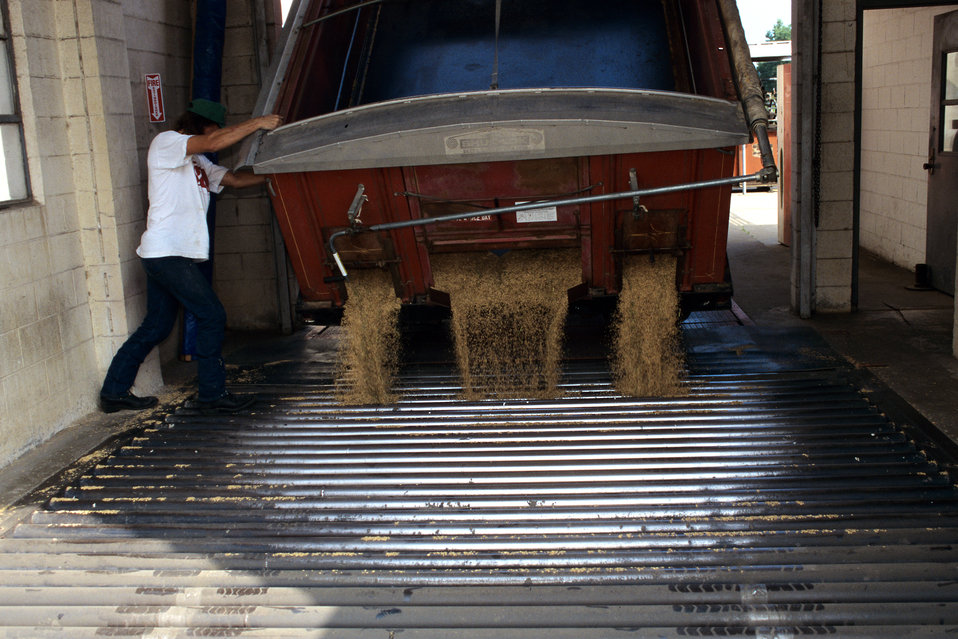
A local driver dumps a load of rough rice into a grain dump pit at Riceland Foods Incorporated in Jonesboro, AR on Sept. 1, 1996. USDA GIPSA offers inspection services for rice upon request on a fee basis for both domestic and export shipments. Rice inspection services are divided into two basic types: inspection for grade or factor analysis without grade. Inspection for grade involves analyzing the sample according to the quality factors listed in the Official U.S. Standards for Rice and certifying the applicable numeric grade designation, the quality factors responsible for the grade assignment, and any other quality factors the customer requests. Factor analysis involves the analysis of quality factors requested by the applicant for service without the certification of an applicable numeric grade designation. Factors requested by applicants might include free fatty acid, total oil and free fatty acid, stain as a count, broken in brown rice, false smut, and aflatoxin. Official inspections result in the issuance of an official certificate, which reports the grade of the rice. U.S. and international buyers rely on official USDA inspection certificates to provide accurate, official descriptions of the grade, class, and condition of the inspected rice. Official certificates are receivable by all offices and all courts of the United States as prima facie evidence of the truth of the statements stated thereon.